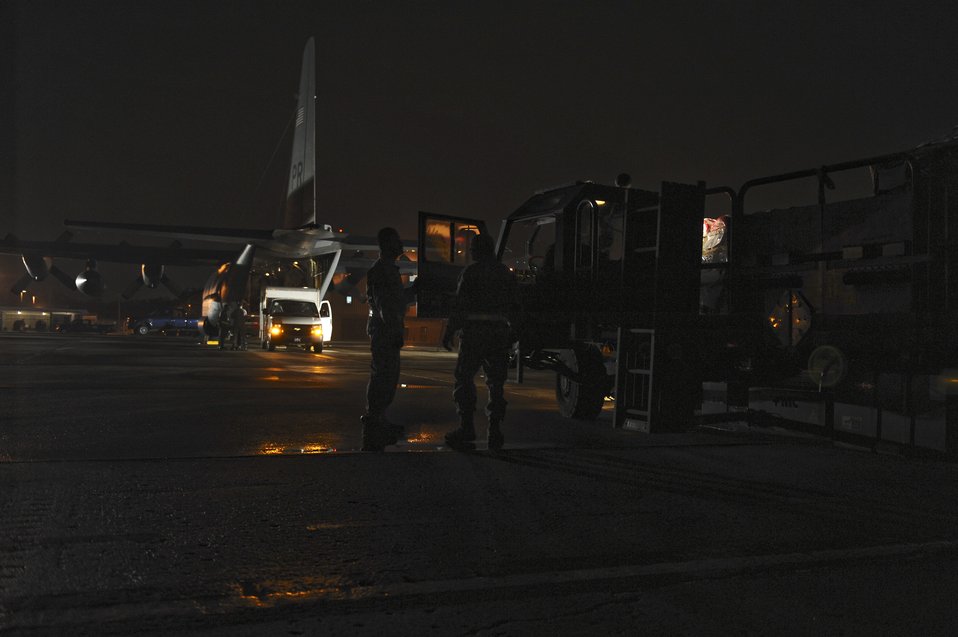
Haiti night mission

Airmen from the Puerto Rico Air National Guard's 156th Airlift Wing load cargo onto a C-130E Hercules aircraft Jan. 16, 2010, to support the relief effort in Haiti in the aftermath of a devastating earthquake.